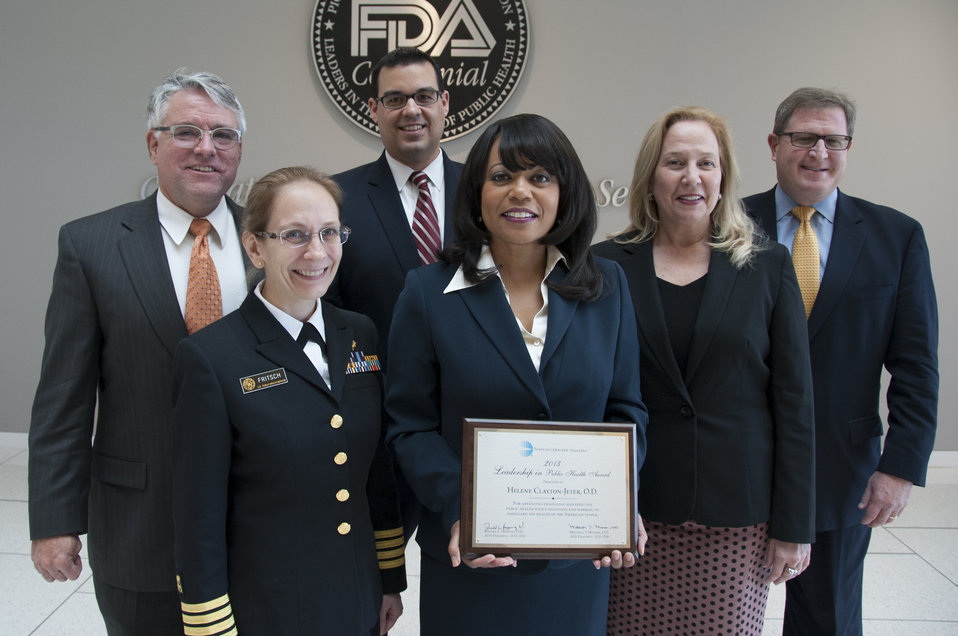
AOA Leadership Award - 9859

Nov. 18, 2013; Dr. Helene Clayton-Jeter (front center) accepted The American Optometric Association (AOA) 2013 Leadership in Public Health Award for her hard work and success in advancing innovative and effective public health policy solutions, and for helping safeguard the health of the American people. She is shown here alongside her FDA colleagues Beth Fritsch, OHCA Deputy Director (front left) and Heidi Marchand, OHCA Assistant Commissioner (front right); and with Dr. Michael Duenas, AOA Chief Public Health Officer (back left); Matt Willette, AOA Assistant Director of Federal Government Relations (back center); and Jon Hymes, AOA Director (back right).

For more information on Helene's award, read this FDA Voice blog post: blogs.fda.gov/fdavoice/index.php/2013/12/a-vision-worth-h...

This photo is free of all copyright restrictions and available for use and redistribution without permission. Credit to the U.S. Food and Drug Administration is appreciated but not required. Privacy and use information: www.flickr.com/people/fdaphotos/